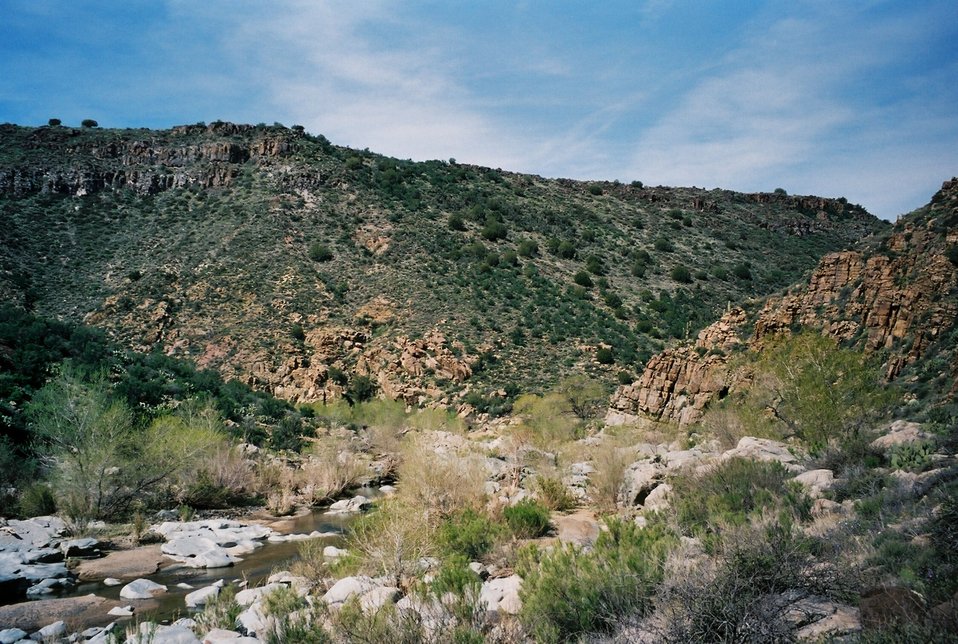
Another landscape in the Agua Fria National Monument backed by the blue Arizona sky.